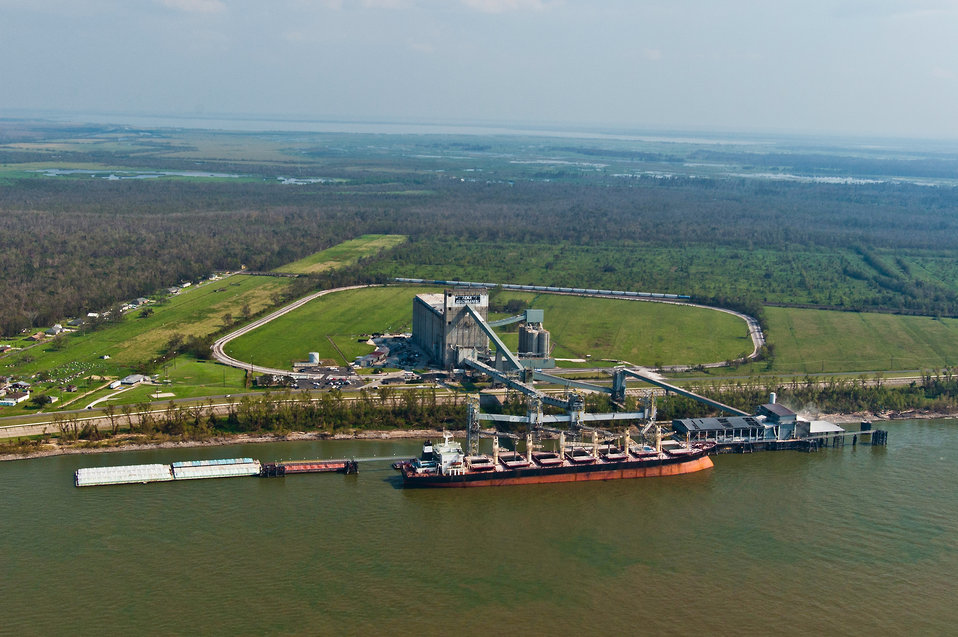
Barge and ship traffic transporting export cargo on the LA on Sept. 9, 2005.